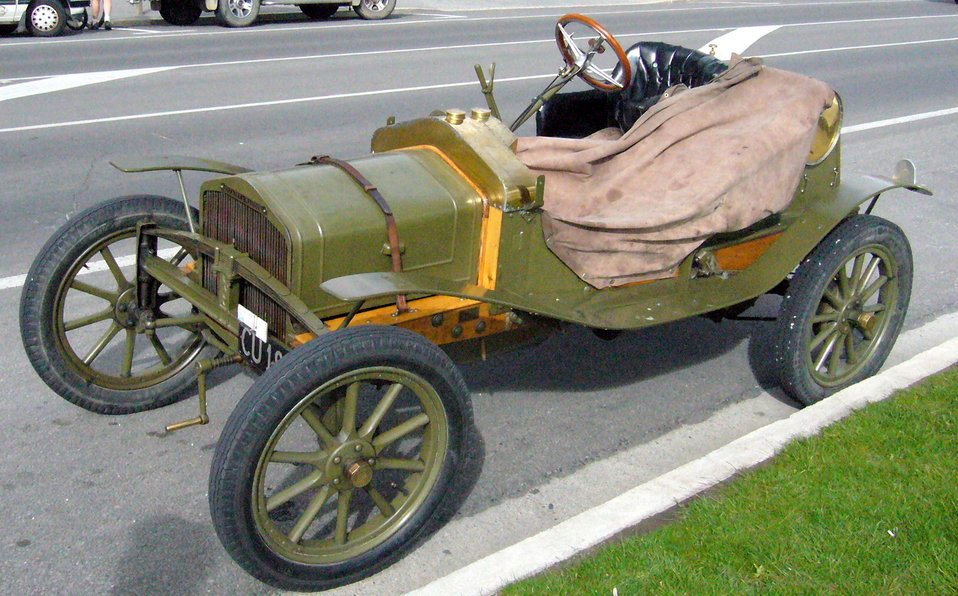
1907 single cylinder Sizaire & Naudin in daily use